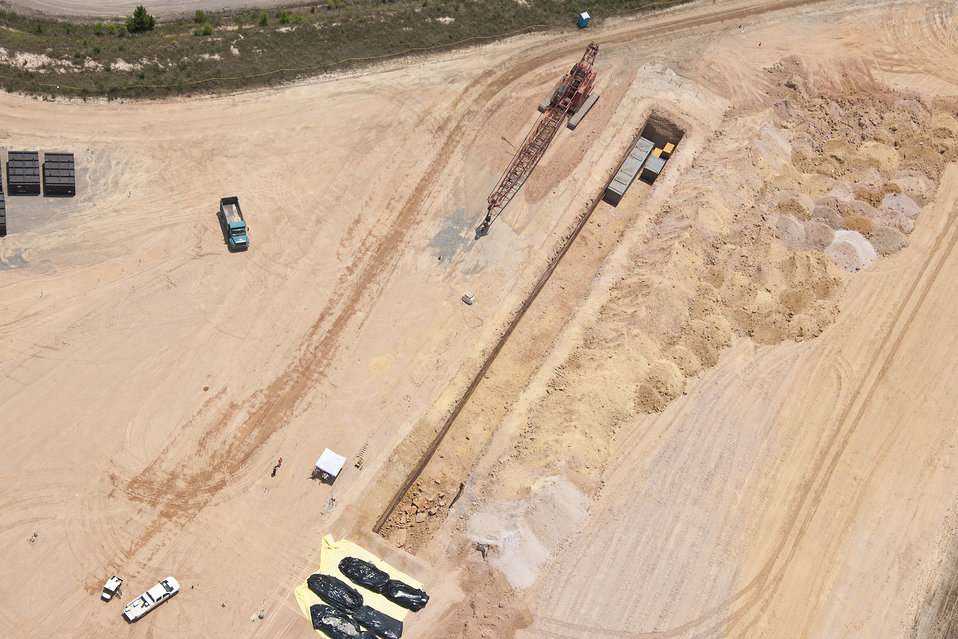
Savannah E Site

Slit trenches in the Savannah River Site’s E Area are used for the disposition of low-level waste. Recovery Act work has generated a large amount of waste that is buried in the trenches.